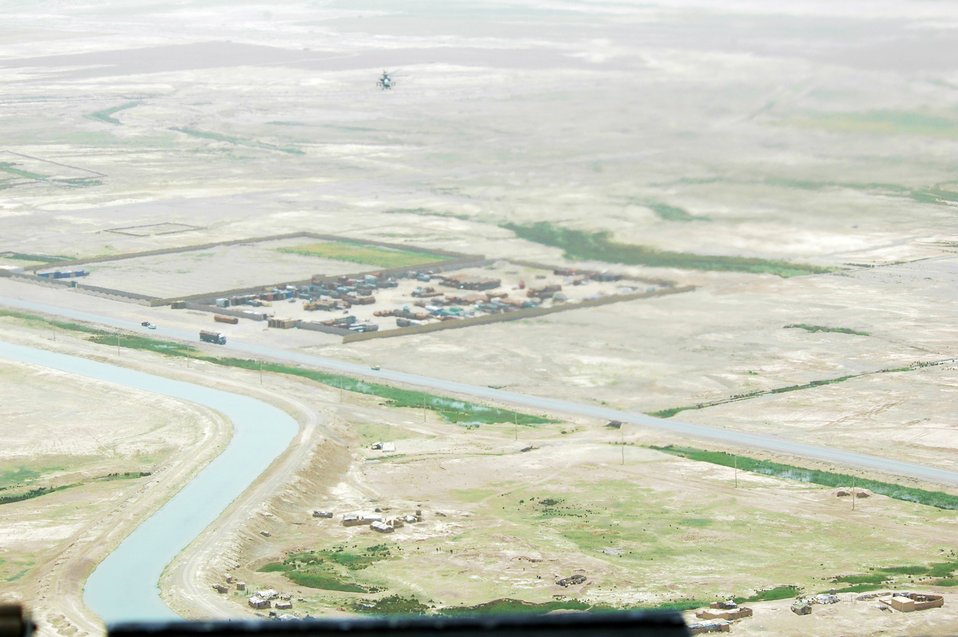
CODEL Berman